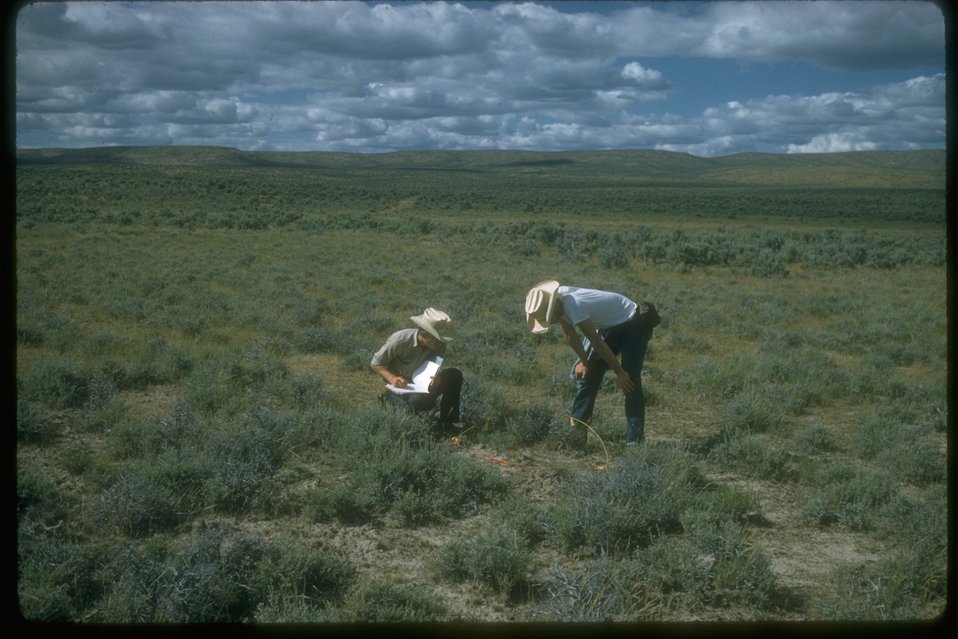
BLM employees range monitoring.